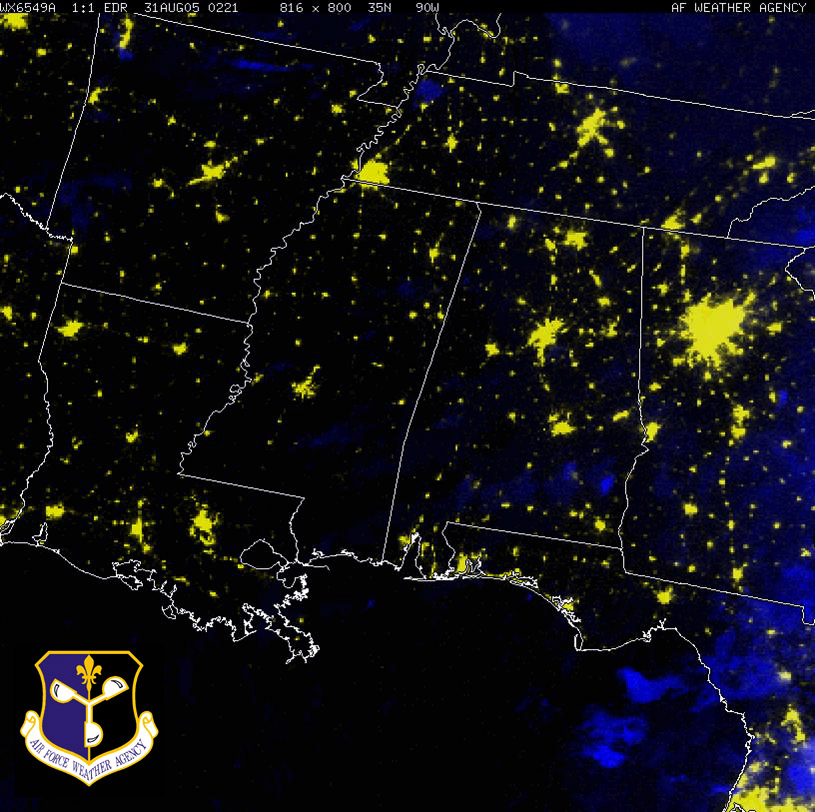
Power outages across Gulf Coast

SATELLITE IMAGE -- This image was taken Aug. 30 and shows the widespread power outages across the Gulf Coast after Hurricane Katrina ravaged the area.